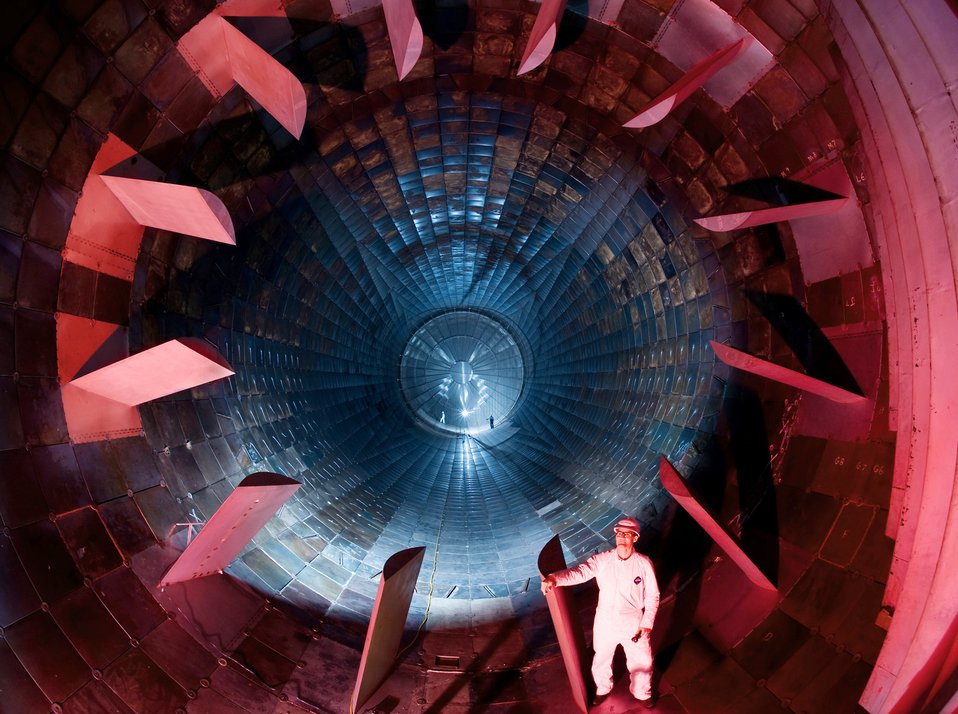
Blow hard

Inside the diffuser section of the16-foot supersonic wind tunnel at Arnold Air Force Base, Tenn., Dr. Richard Roberts checks out the turbine blades during a site visit Oct. 6, 2009. Dr. Roberts is the project manager of the von Karman Gas Dynamics Facility and the Propulsion Wind Tunnel Facility located at Arnold Engineering Development Center on Arnold AFB.